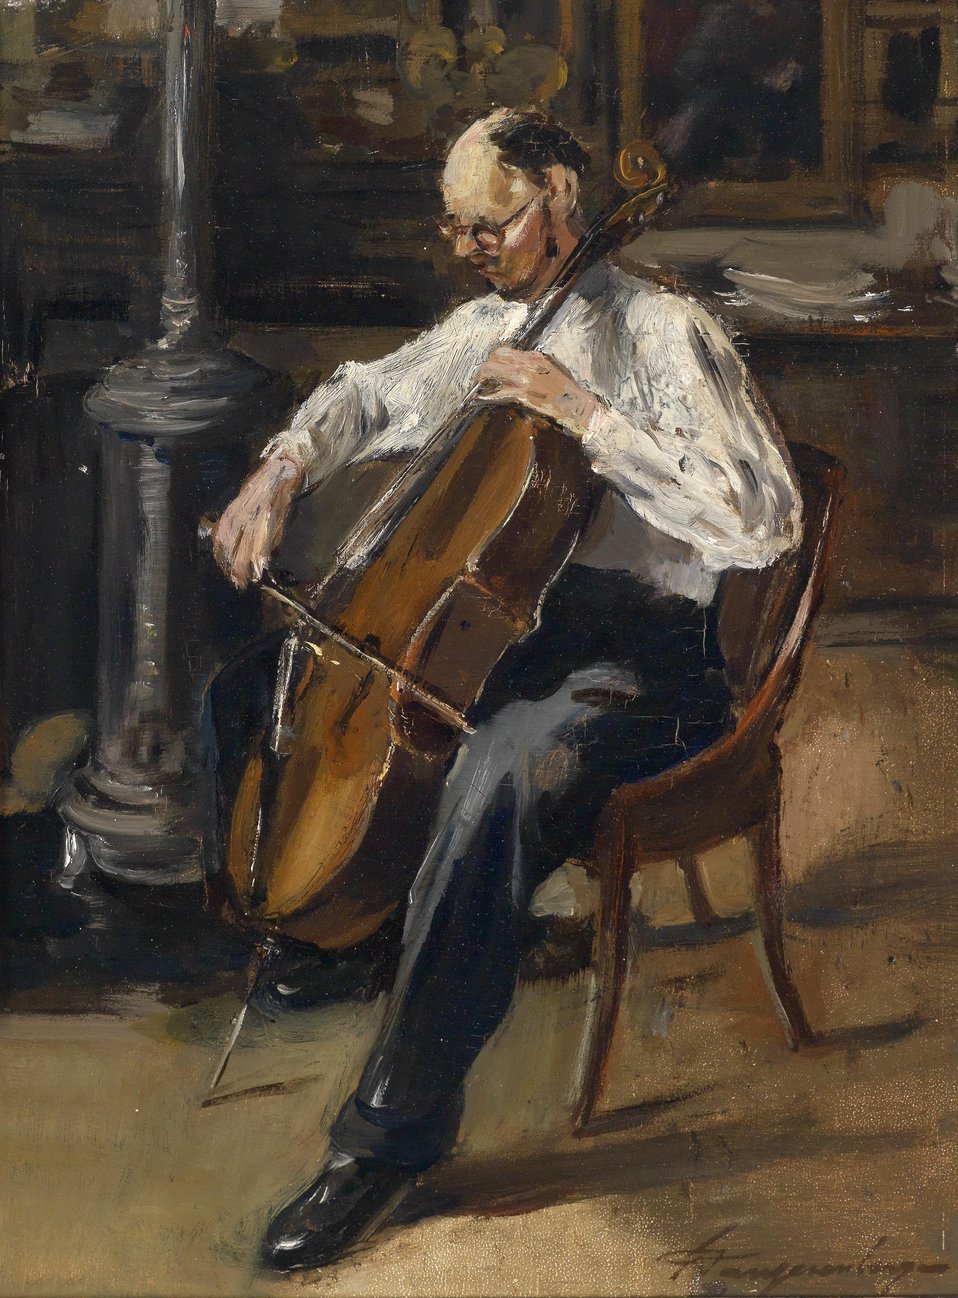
Cellospieler. Undeutlich signiert (angeblich belgischer Künstler, Ende 19. Jh.), Öl auf Holz, 33 x 24 cm